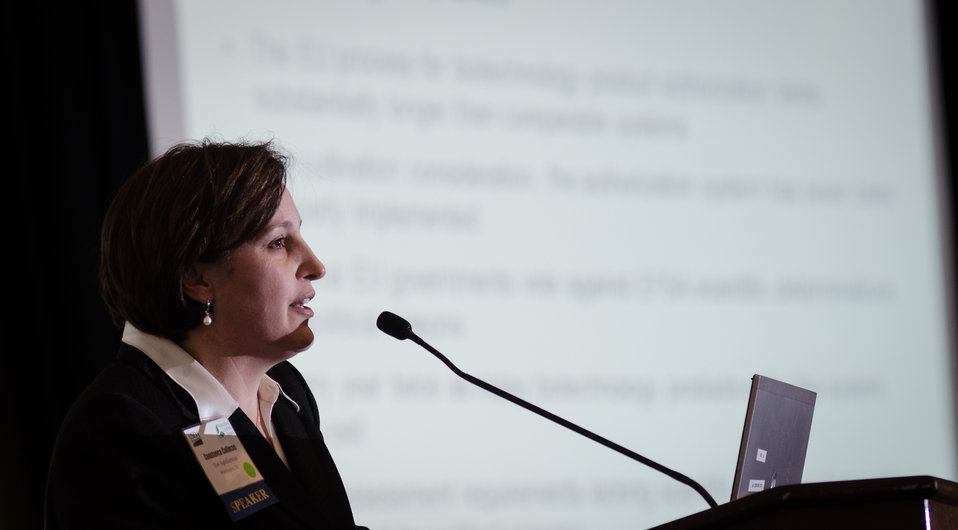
Dow AgroSciences U.S. Federal Government Affairs Leader Constance Cullman, speaking at the 2013 Agricultural Outlook Forum, held at the Crystal Gateway Marriott Hotel, Arlington, Virginia on Thursday, Feb. 21, 2013. This annual Forum brings together producers, policymakers, and business, government, and industry leaders to meet, exchange ideas, and discuss timely agriculture issues.